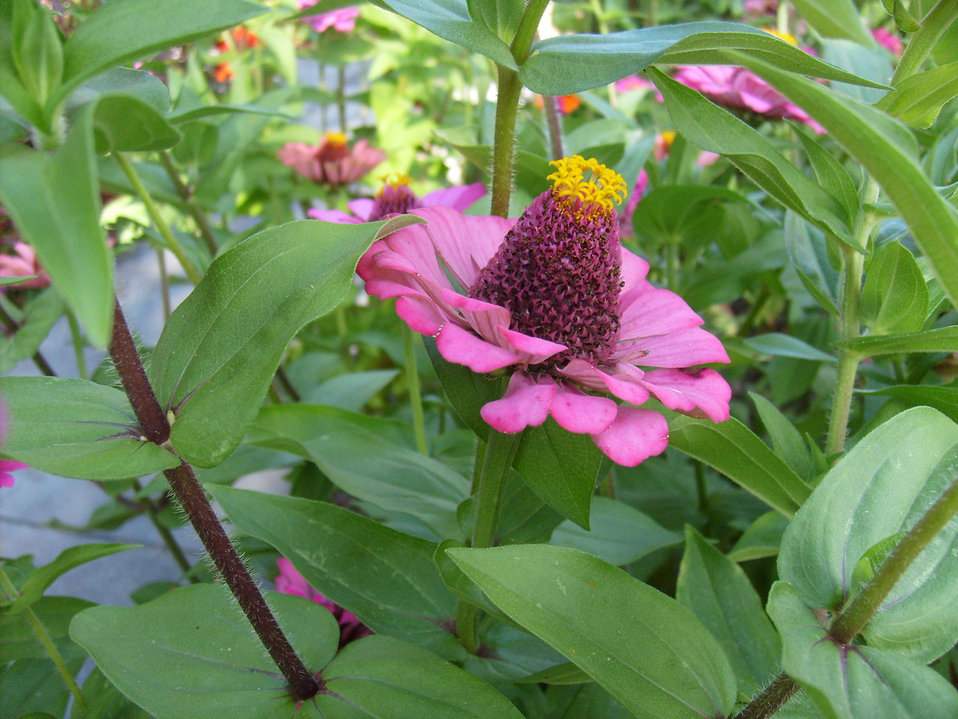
Flower and stem

Flower bloom.